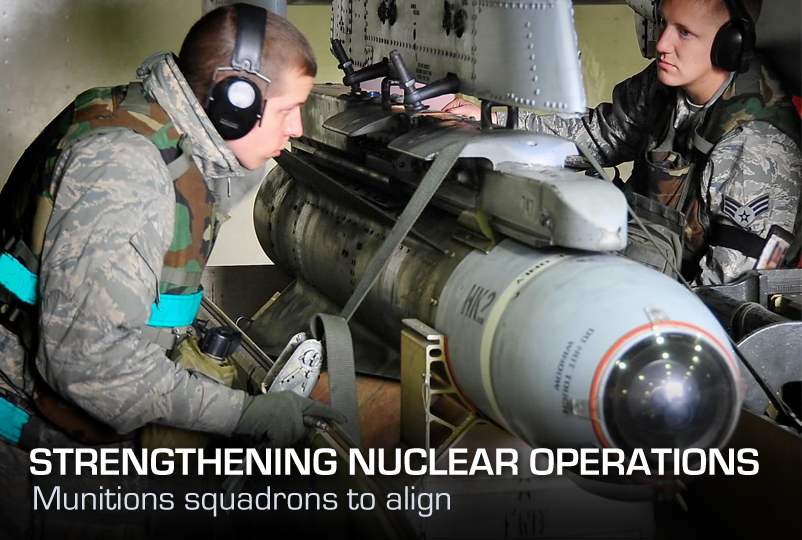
Strengthening Nuclear Operations